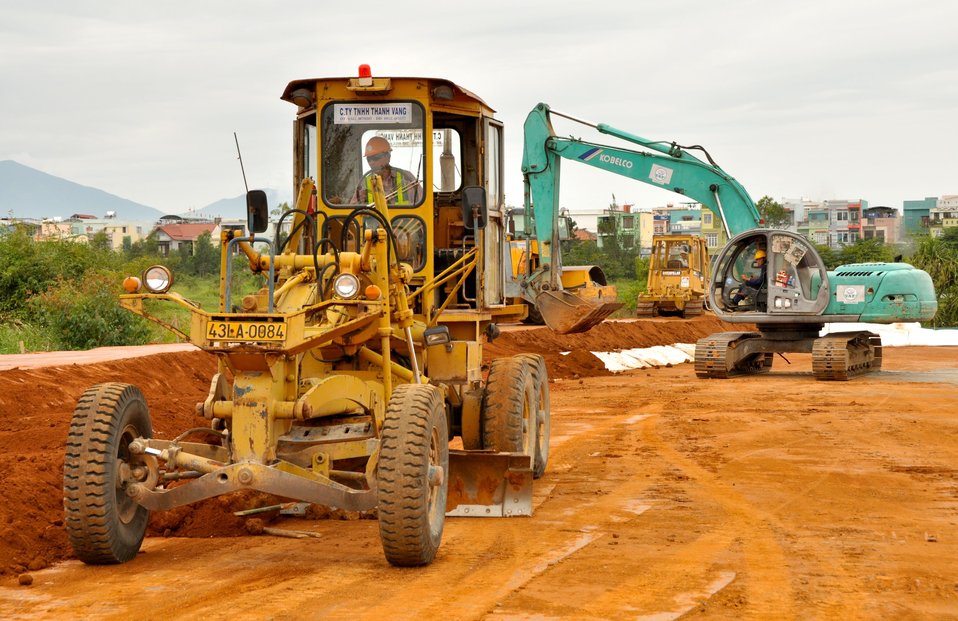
Site Preparation for Environmental Remediation of Dioxin Contamination at Danang Airport

Danang Airport, January 22, 2013